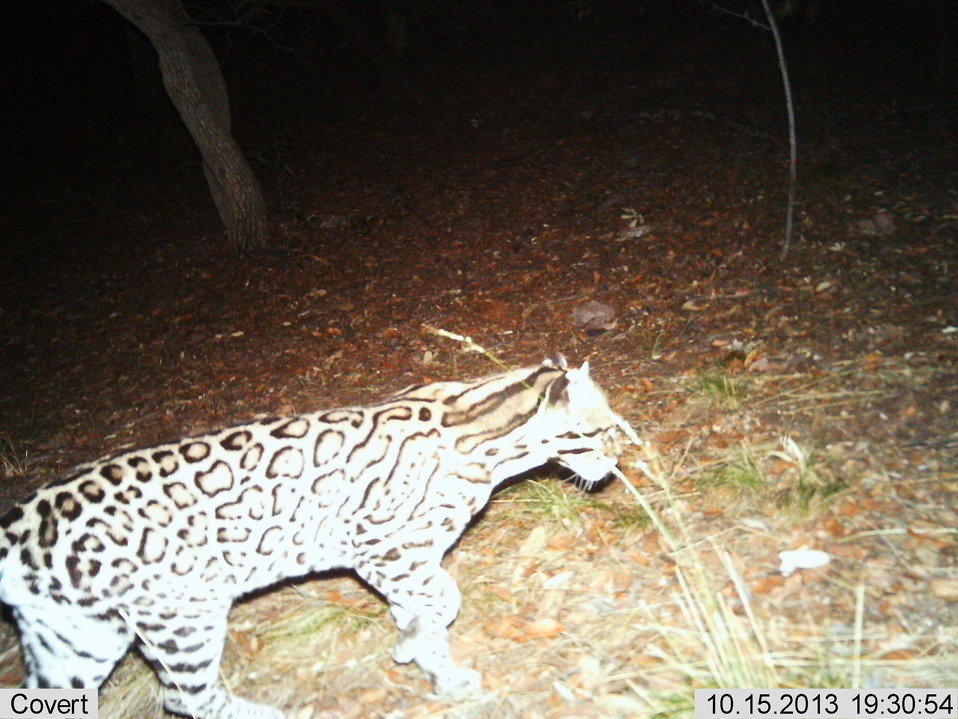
Male ocelot photographed by automatic wildlife cameras in the Huachuca Mountains on October 15, 2013, as part of a U.S. Fish and Wildlife Service/Department of Homeland Security-funded jaguar survey conducted by University of Arizona. This ocelot, one of two currently known in the Huachuca Mountains, was last photographed by a UA trailcam on February 5, 2013. The last detection of the other ocelot in the Huachuca Mountains by a UA trail cam was May 22, 2013.